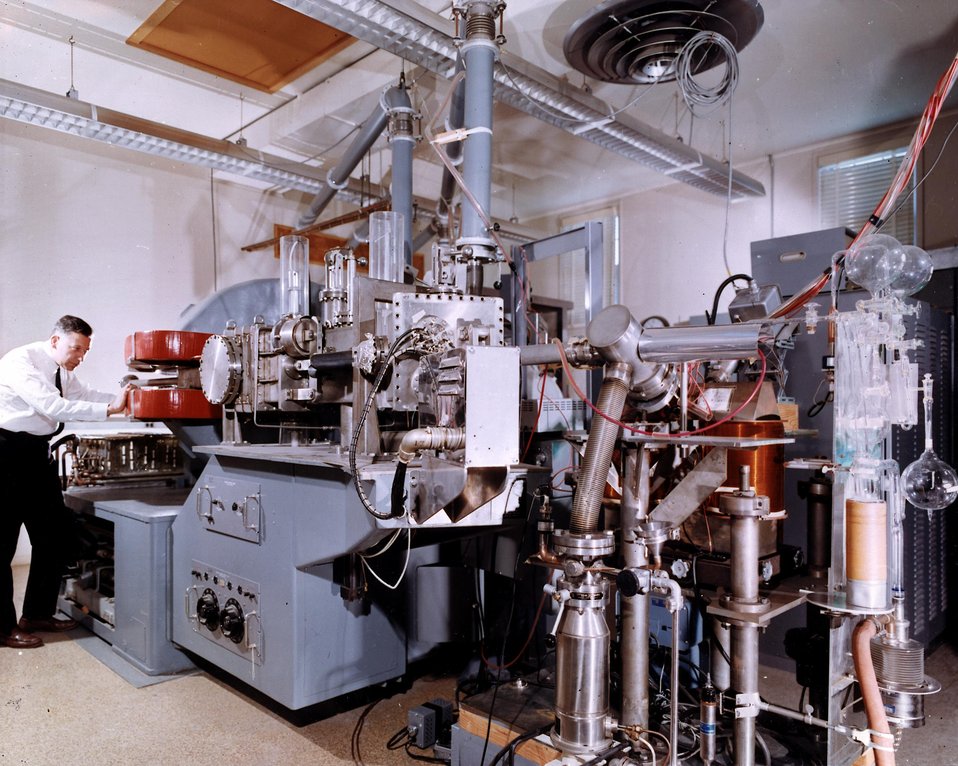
The Brookhaven Electromagnetic Isotope Separator is being used by Dr. Lewis Friedman of the Chemistry Department to generate intense, low energy, mass analyzed beams of ions for research on ion-molecule collision processes. c. 1966